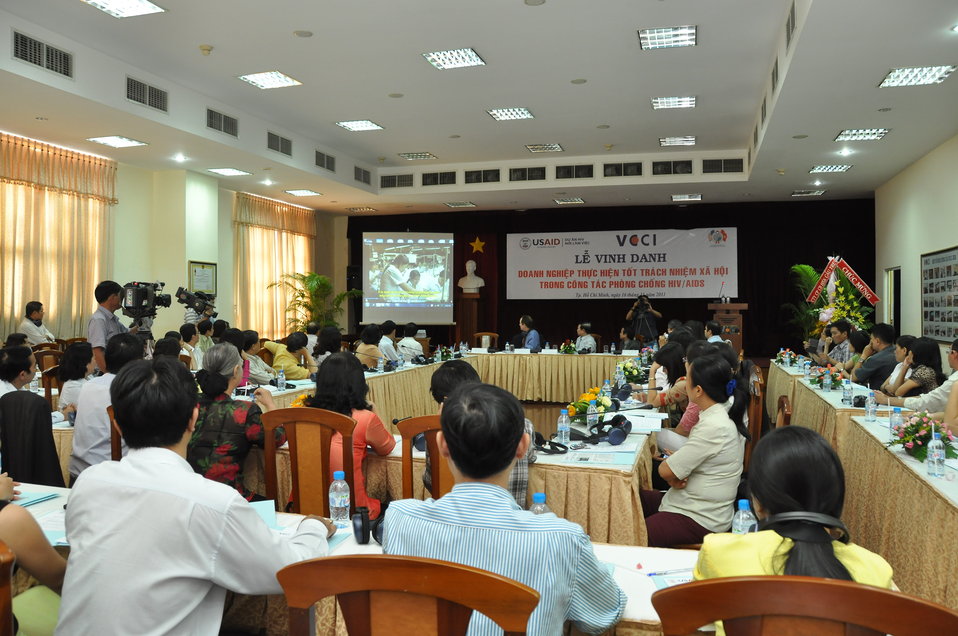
USAID and VCCI present certificates to enterprises active in HIV awareness and support

Award ceremony in Ho Chi Minh City on November 16, 2011